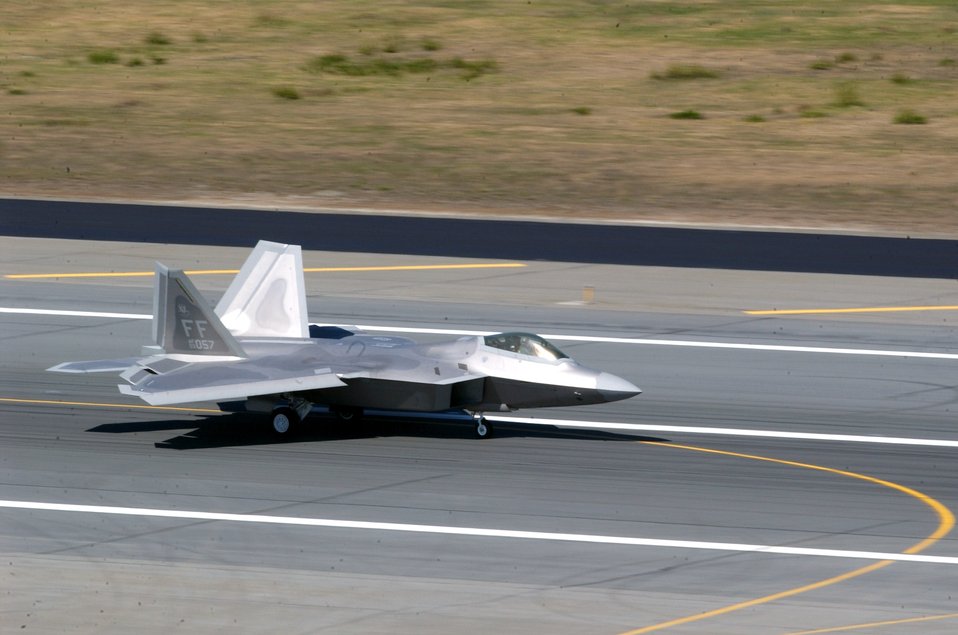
F-22s arrive at Elmendorf for exercise

An F-22 Raptor taxis after landing at Elmendorf Air Force Base, Alaska, on Tuesday, May 23, 2006. Raptors from the 27th Fighter Squadron at Langley AFB, Va., are supporting Exercise Northern Edge 2006. The Air Force has selected Elmendorf as the home for the next operational F-22 squadron. The base will receive 36 Raptors, with the first jet expected in fall 2007.